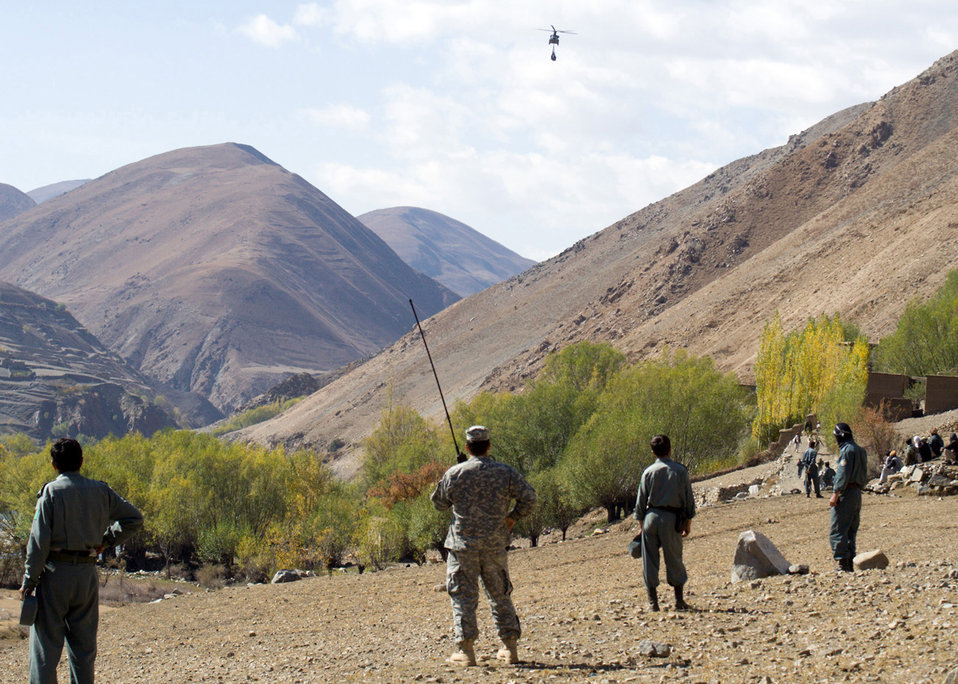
Humanitarian Relief

Army Sgt. 1st Class Tony Perez calls in a Chinook helicopter carrying humanitarian assistance to the remote Paryan District in the Panjshir Province Oct. 28. Two loads totaling four tons worth of rice, beans, tea, cooking oil, salt and powdered milk were delivered. The mission was the first-ever helo drop in Paryan.